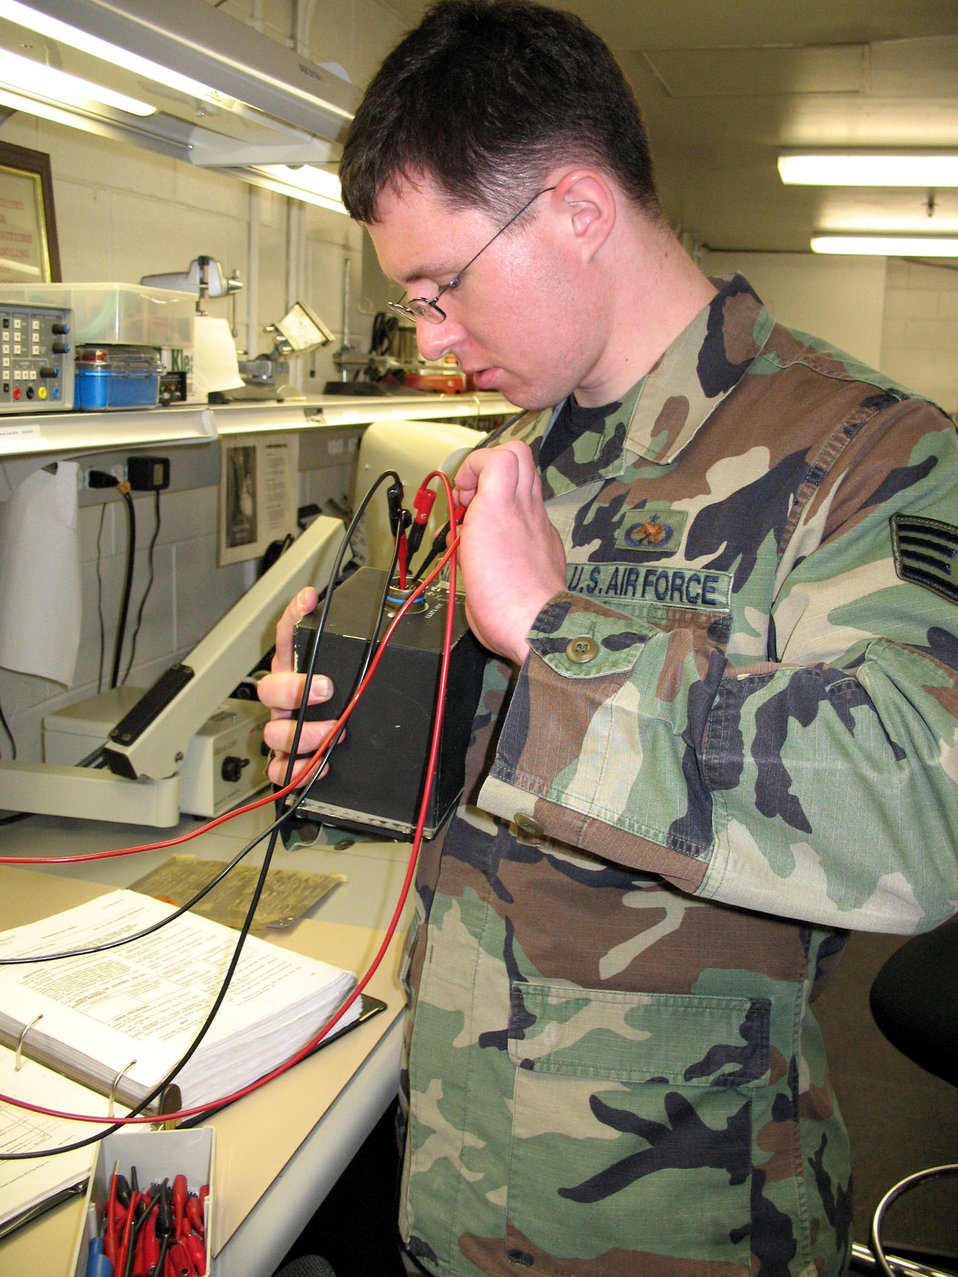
In-house repairs to keep costs down at Misawa Air Base

Staff Sgt. Keith Hall is a member of the three-person Air Force Repair Enchancement Program at Misawa Air Base, Japan. The AFREP keeps maintenance costs down by increasing wing-level repair of aerospace parts and equipment. Sergeant Hall is with the 35th Maintenance Group.